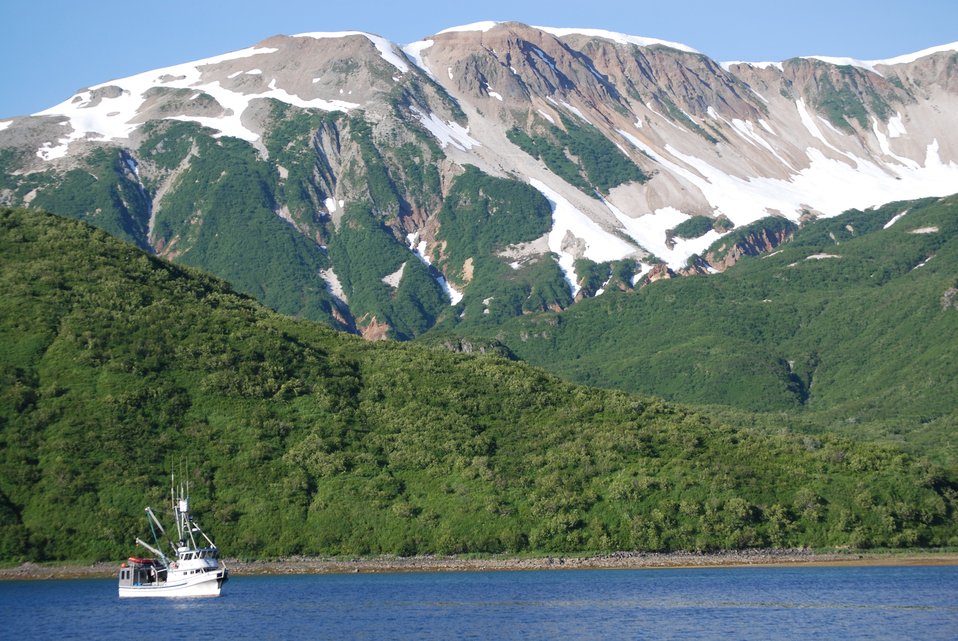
Rocky algae covered shoreline of Kukak Bay with fog bisecting view from bay to spectacular mountains in background.